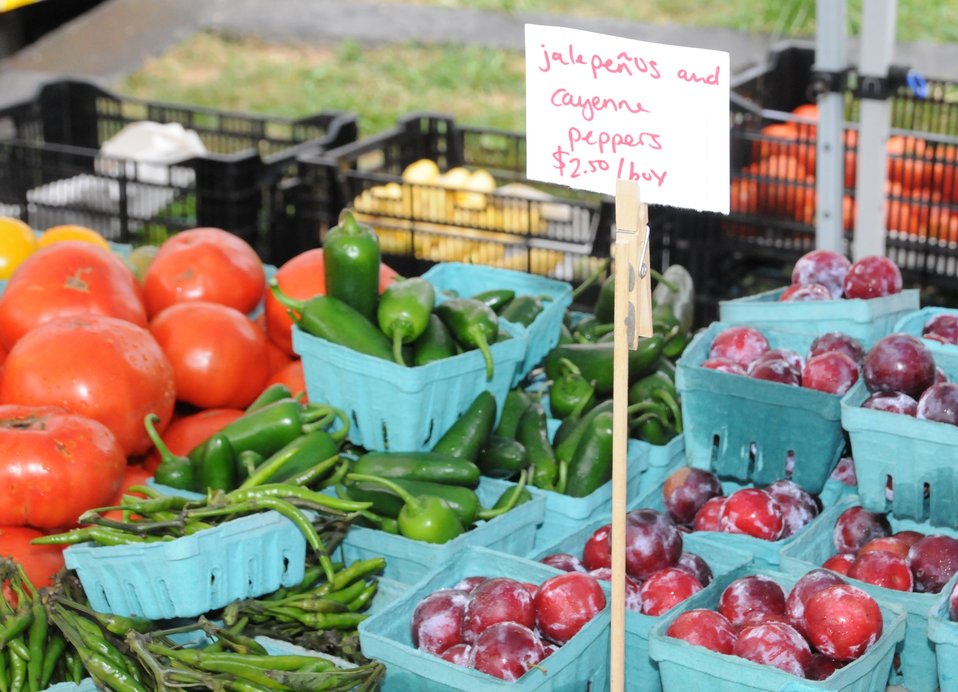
Jalapenos, Tomatoes, Plums

Produce offerings at the Columbia Heights Community Marketplace.